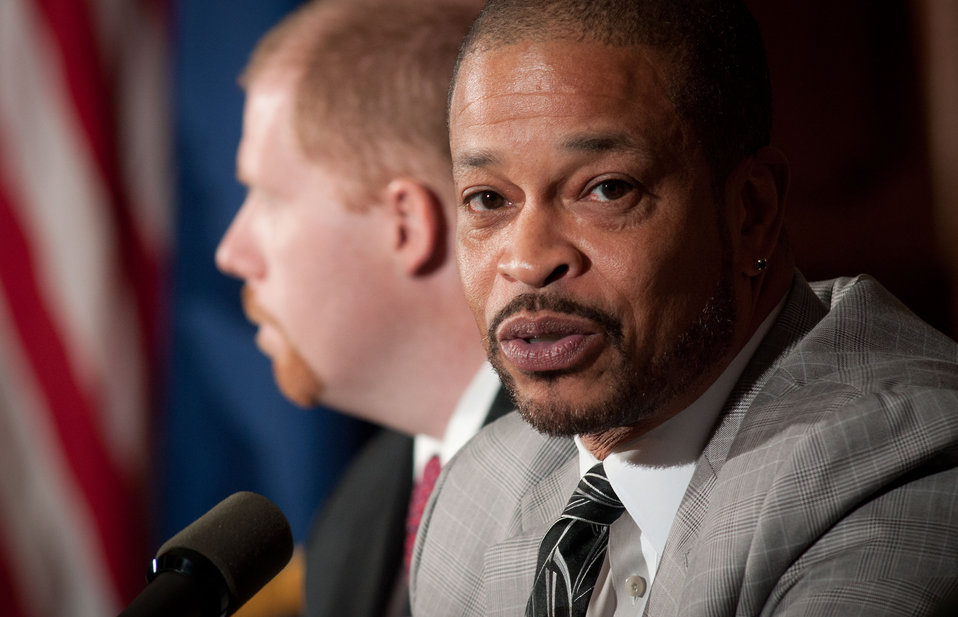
United States Department of Agriculture (USDA) Departmental Management Office of Human Resources Management Deputy Director William P. Milton, Jr. participated in the panel discussion during the Work Force Recruitment Program’s (WRP) “Your Key To Hiring Student Interns and Employees with Disabilities” event hosted by the United States Department of Agriculture (USDA) and held in the Jefferson Auditorium, in Washington, D.C. on Tuesday, February 7, 2012.